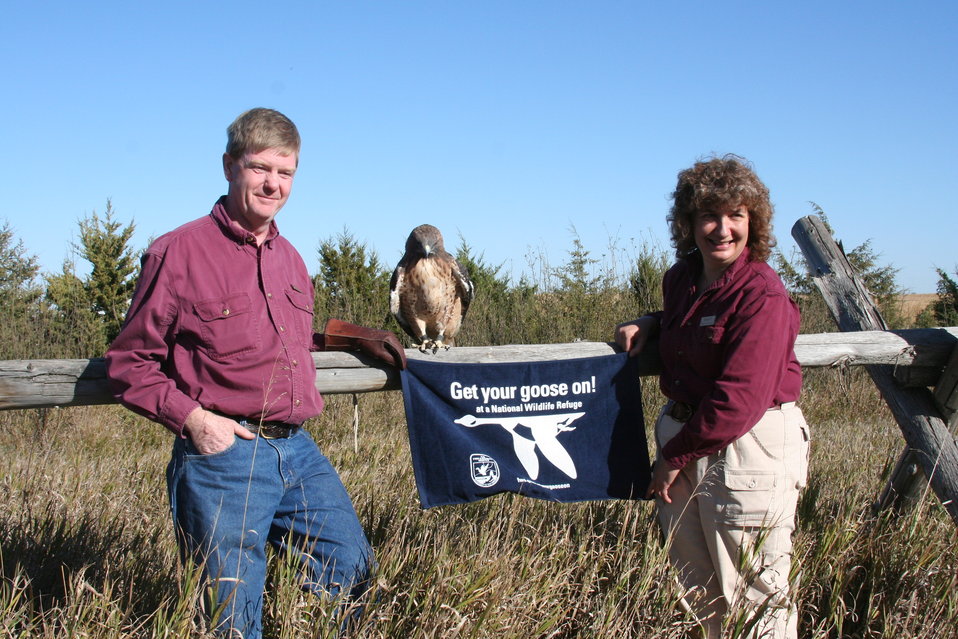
Prairie Fest 2012

Get your Goose On!